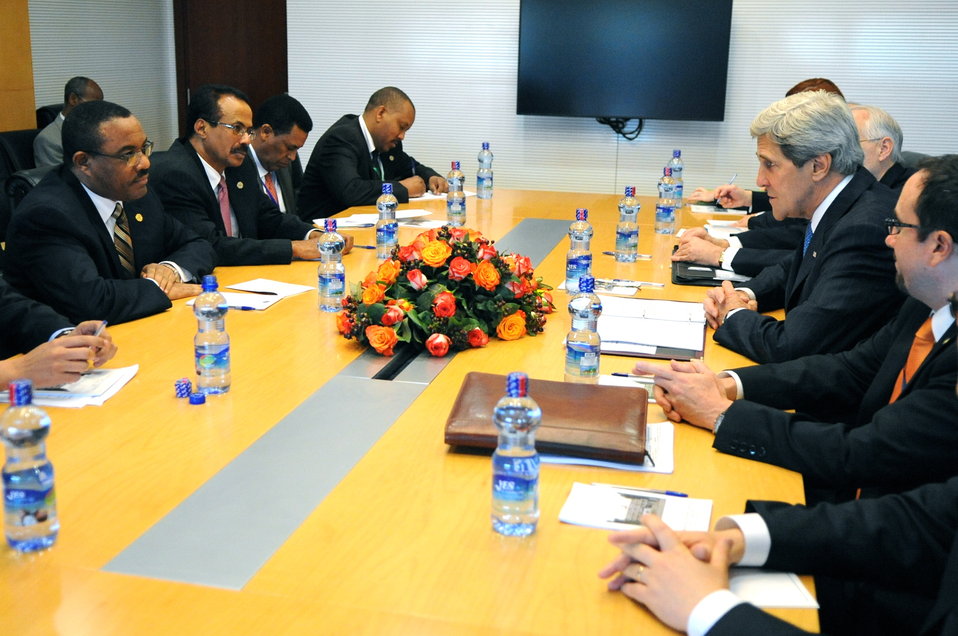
Secretary Kerry Meets With Ethiopian Prime Minister Dessalegn

U.S. Secretary of State John Kerry meets with Ethiopian Prime Minister Hailemariam Dessalegn as they both attend the 50th anniversary African Union Summit in Addis Ababa, Ethiopia, on May 25, 2013.